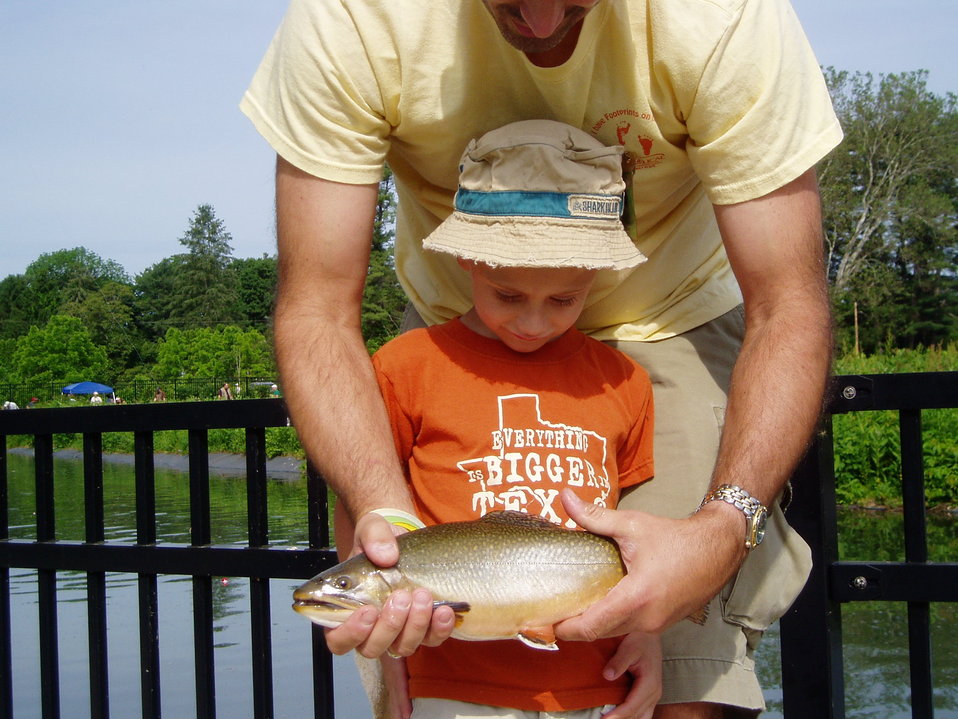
Northeast Fishery Center's Annual Fishing Event

Boy holds his catch at the Northeast Fishery Center's annual fishing event in Lamar, PA.